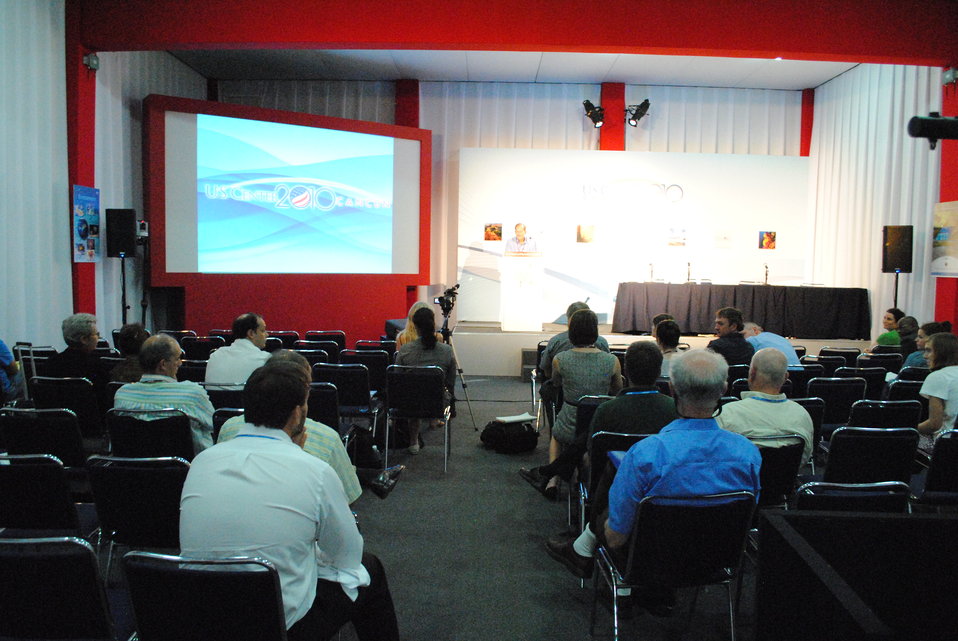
Viewers Wait To Learn About a Climate Change Research Program in the United States

Viewers wait for the U.S. Center side event, 'Climate Change Research Program in the United States,' at COP-16 in Cancun, Mexico, on November 30, 2010.